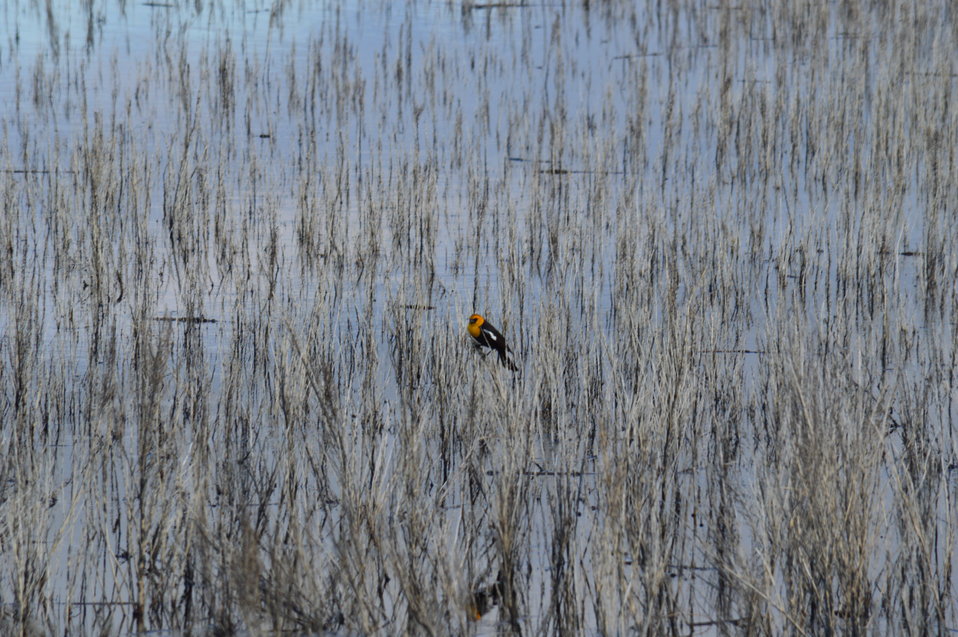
Yellow-headed blackbird in the grasses

Scenery and wildlife at Sand Lake National Wildlife Refuge in South Dakota.